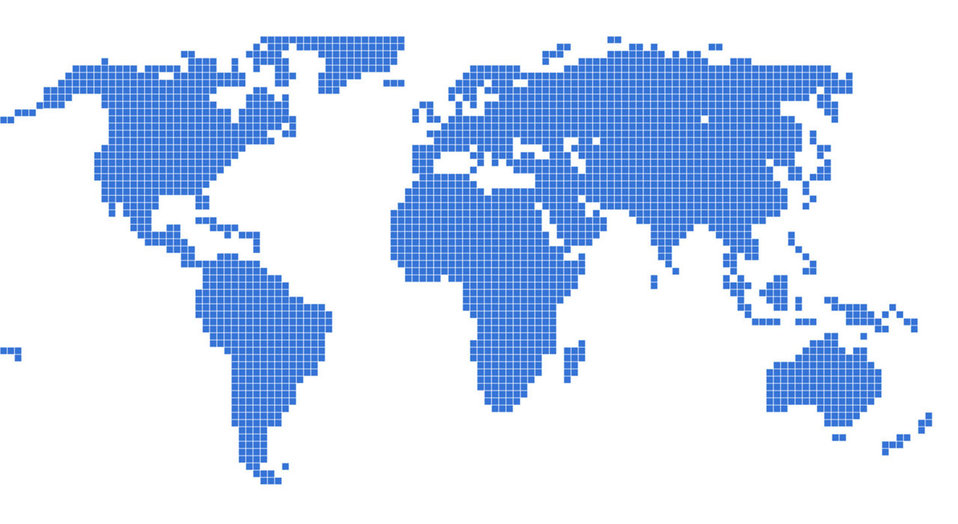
World map in grid format.